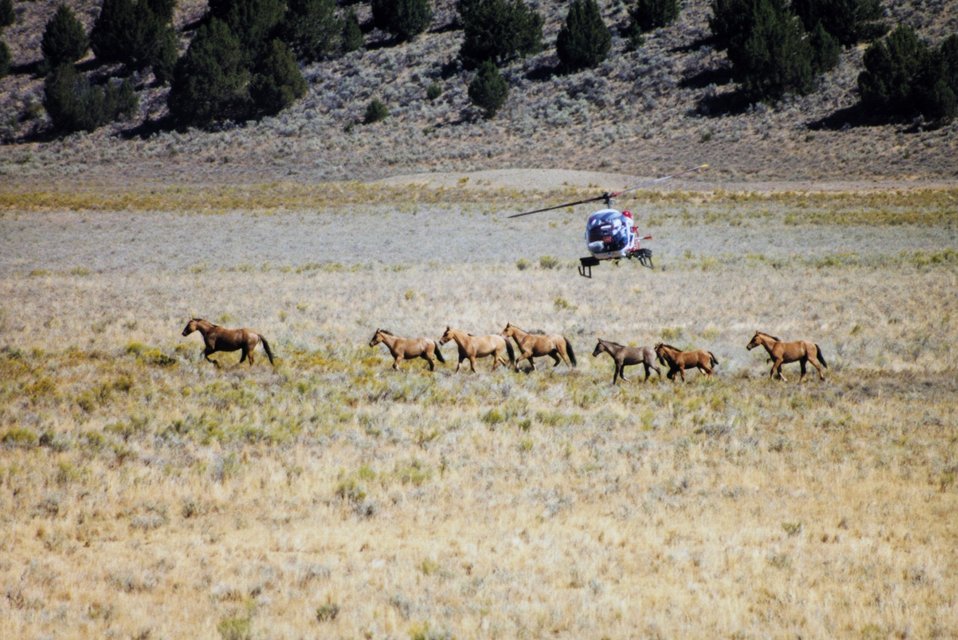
Riddle Wild Horse Management Heard Area.